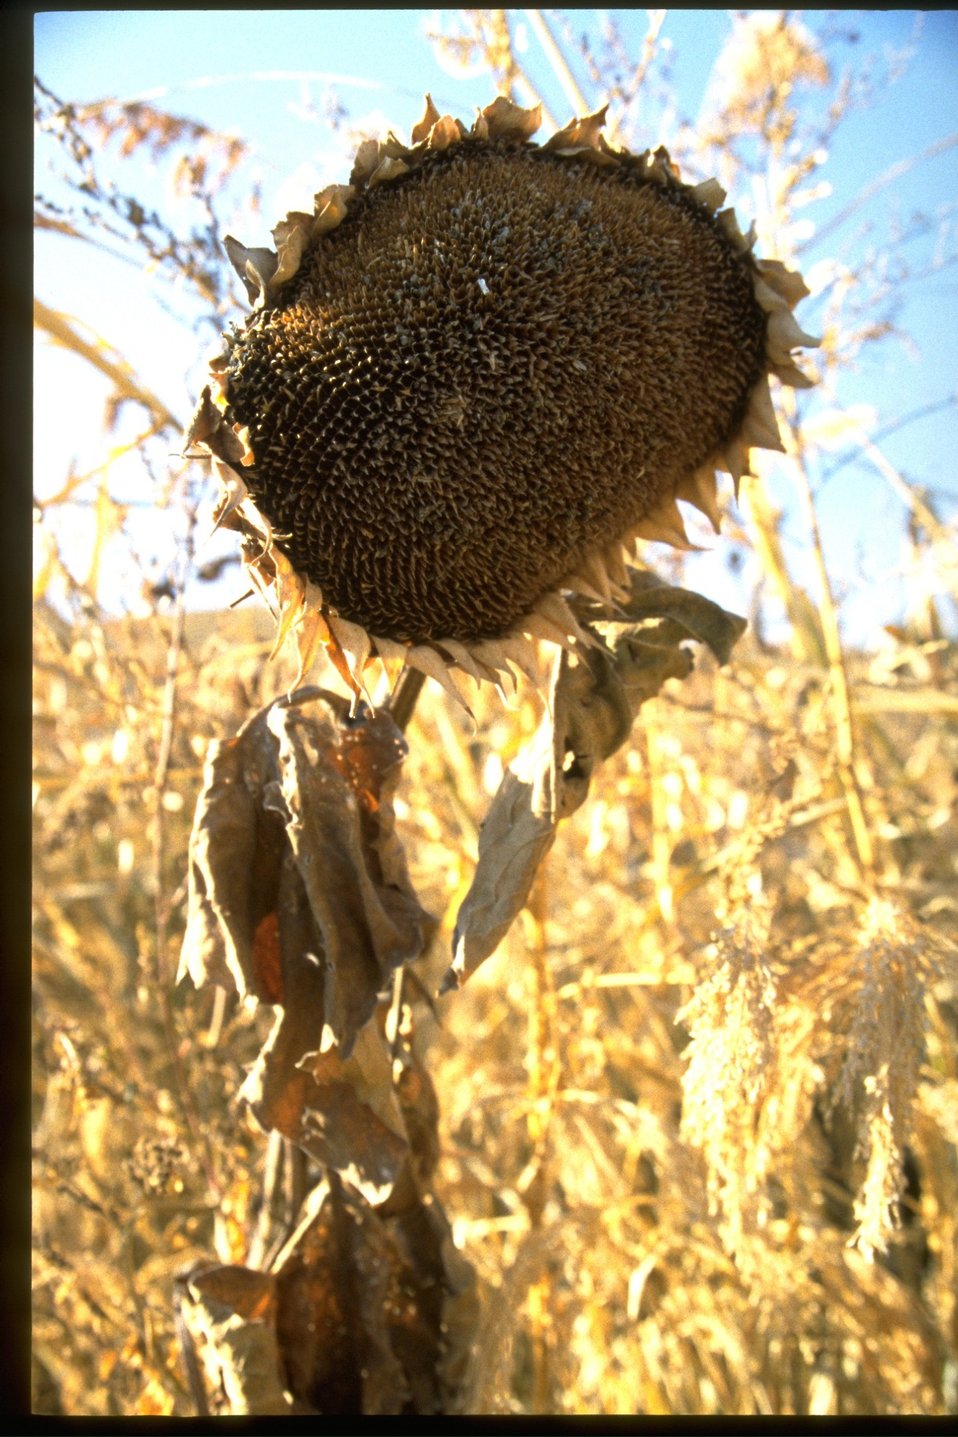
A sunflower seed head (spent) in the John Day River area.